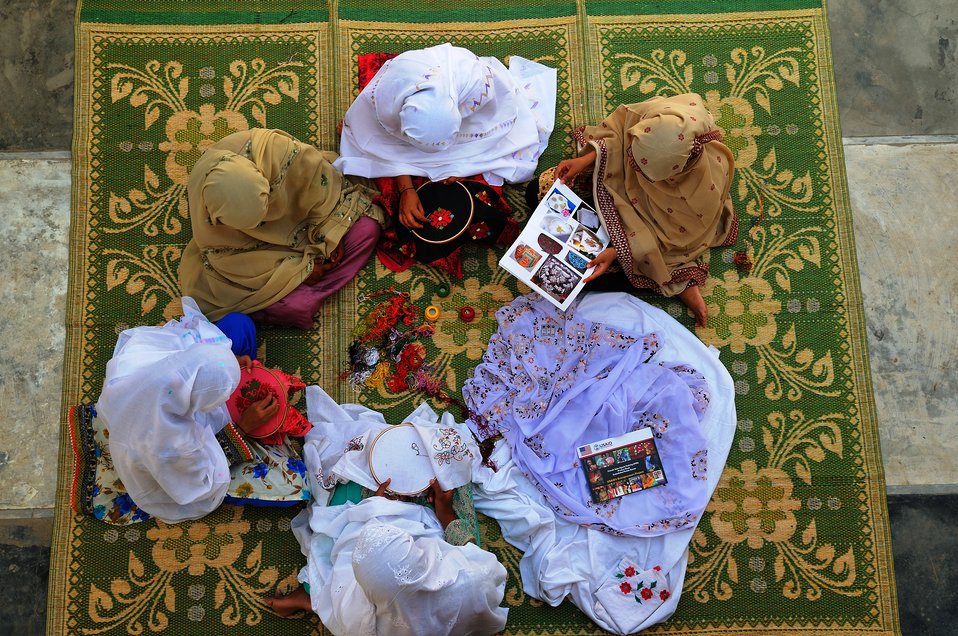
Teaming up

Swat, May 20, 2012 - 24,000 women embellishers across different regions and districts of Pakistan have been grouped in numerous clusters to provide with technical training on product development, pricing an costing, and market linkages